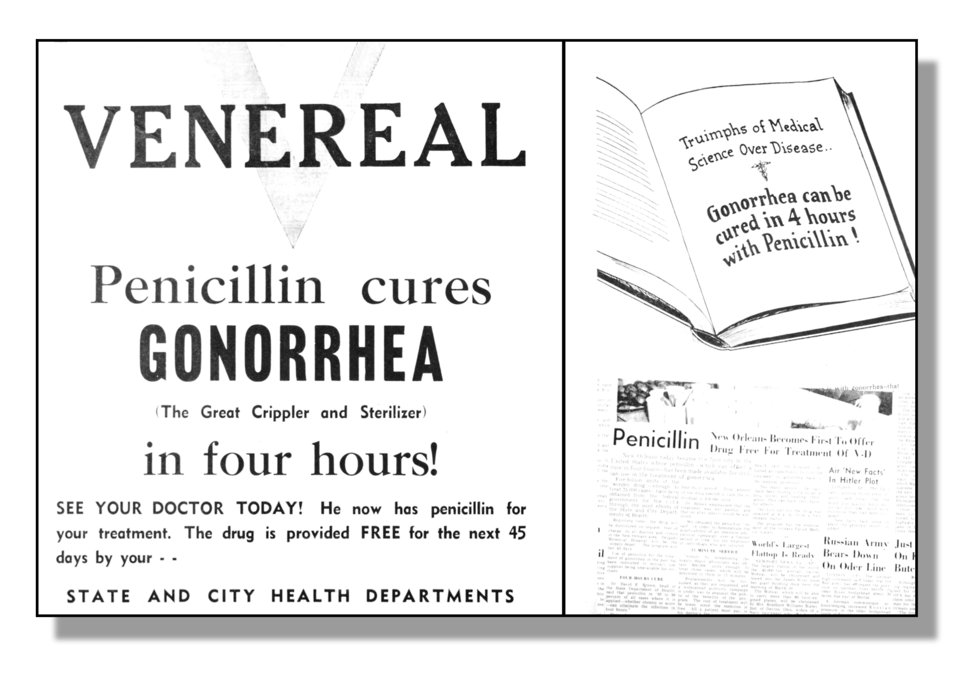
A poster promoting the use of penicillin in the treatment of gonorrhea.